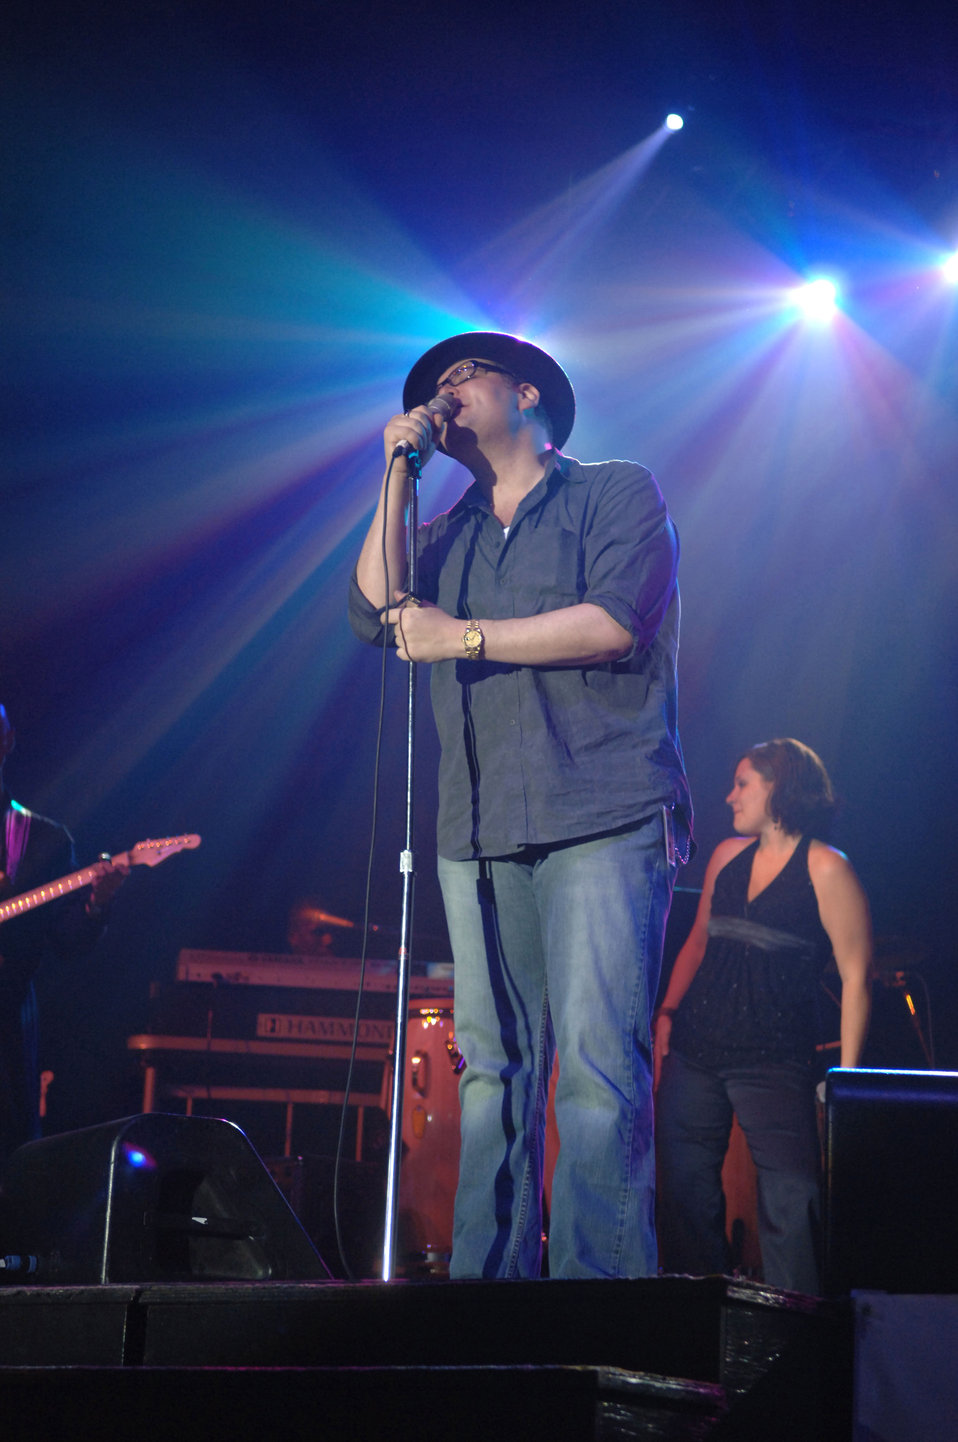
Performers bring holiday cheer to the 'Lik'

John Popper of the platinum-selling group, Blues Traveler, sings to more than 500 Airmen during the Operation Season's Greetings concert Nov. 22 at Incirlik Air Base, Turkey.